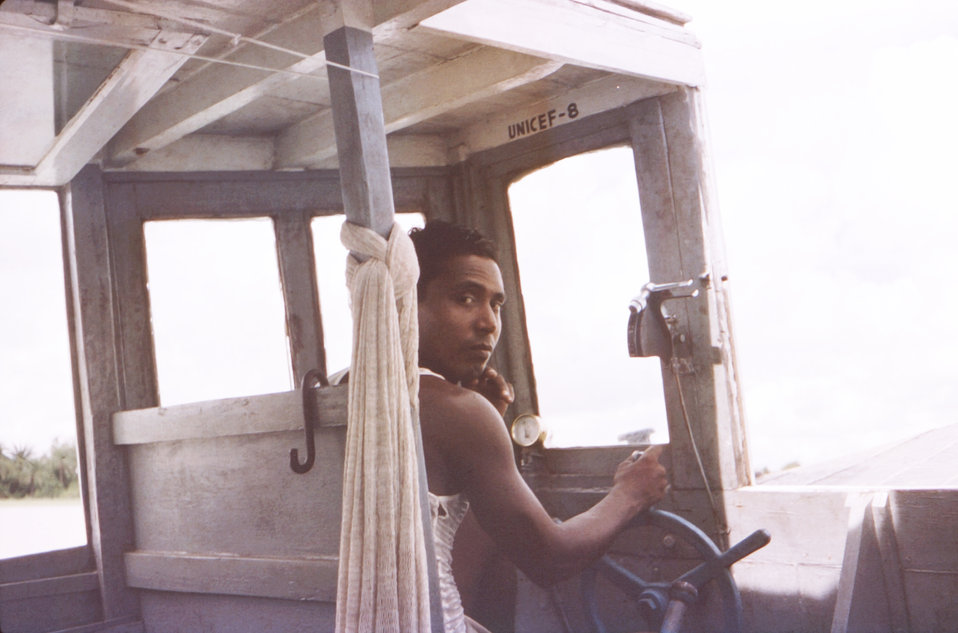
This October, 1975 photograph depicted boat Captain, and driver, Robin Gomes, while at the helm of a 'UNICEF 8' boat on a Patuakhali District waterway, in the country of Bangladesh.